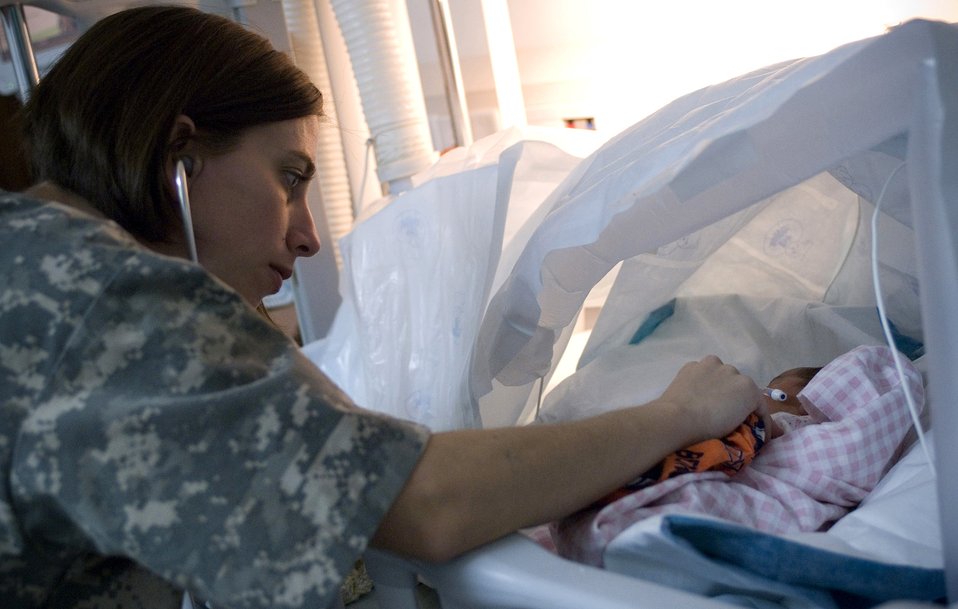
First Afghan baby born at Bagram Air Field

First Lt. Michelle Pierson listens to the heartbeat of the first Afghan baby born in the Craig Joint Theater Hospital at Bagram Airfield, Afghanistan, Oct. 6. Without typical neonatal equipment on hand, the hospital staff created a makeshift incubator with a warming blanket and wire hangars. Lieutenant Pierson is an intensive care unit nurse deployed from Travis Air Force Base, Calif.